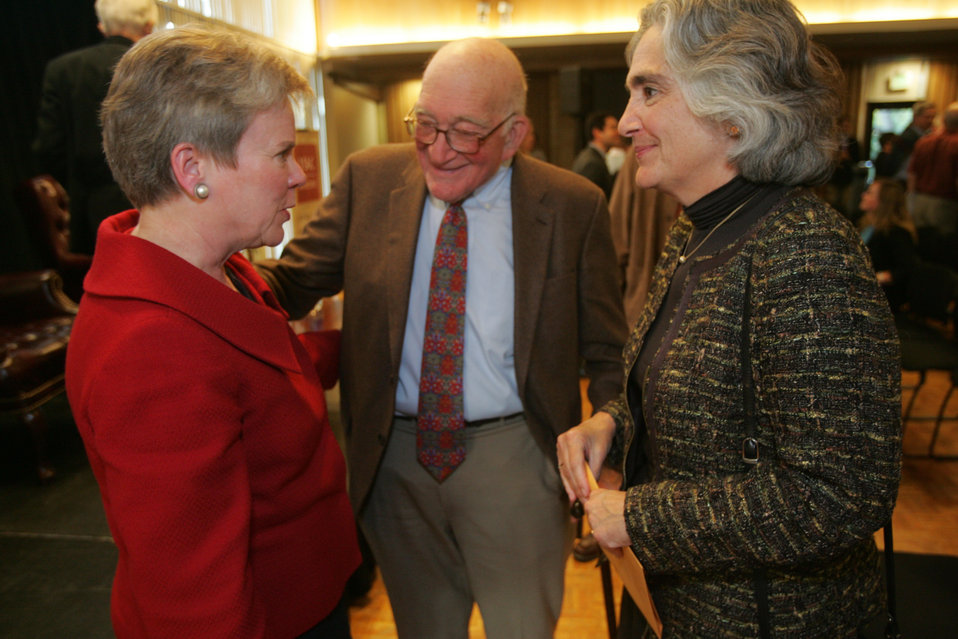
Assistant Secretary Gottemoeller Speaks With Guests

Assistant Secretary of State for Arms Control, Verification and Compliance Rose Gottemoeller speaks with guests a the Center for International Security and Cooperation (CISAC) in Stanford, California, on October 27, 2011.